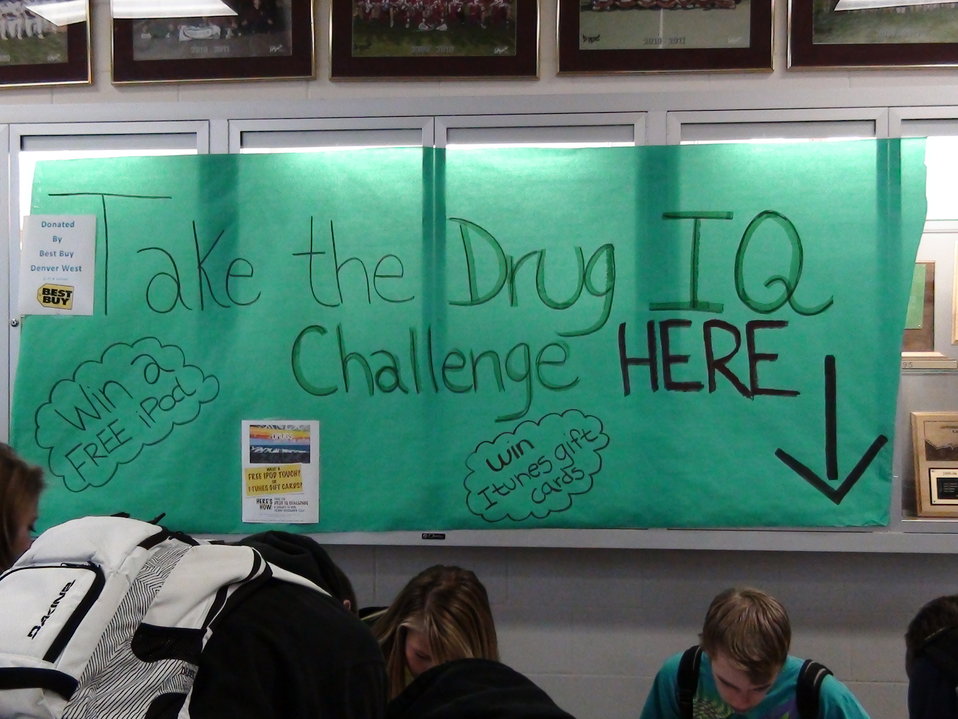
Golden High School NDFW Event

Students taking the Drug IQ Challenge at Golden High School following the school's assembly and proclamation.